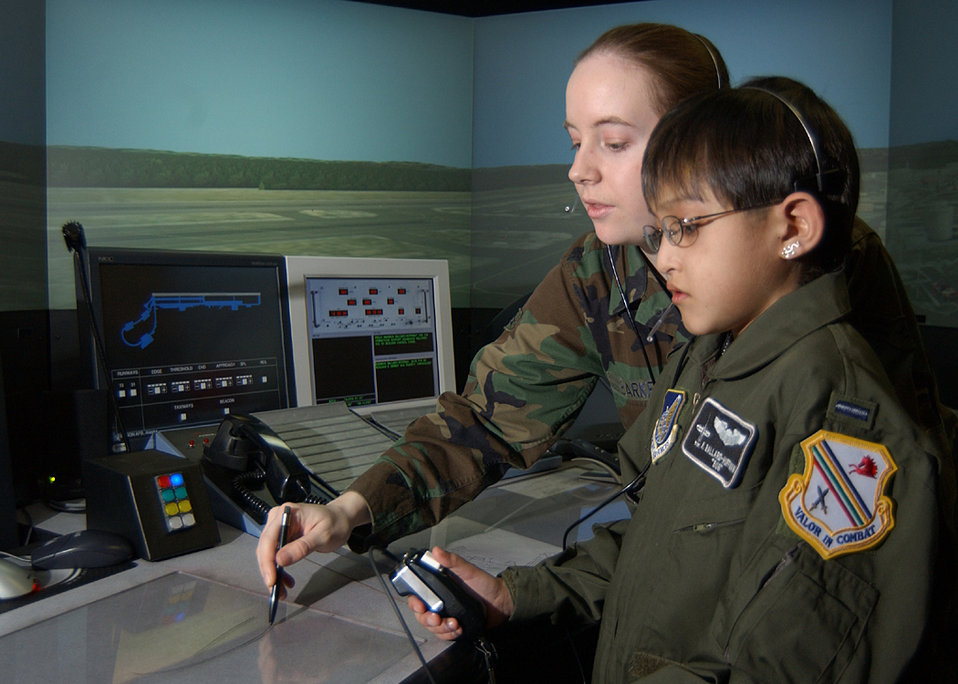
Pilot for a day

EIELSON AIR FORCE BASE, Alaska -- Airman 1st Class Nancy Barker explains the role of air traffic controllers to Kameron Ballard-Huffman at the simulator here. Kameron served as Fighter Pilot for a Day on March 18. The program lets terminally ill children see what it is like to be a fighter pilot. Kameron is in the end stage of a rare liver disease. He is from Husila, Alaska, a town about 250 miles northwest of Fairbanks. Airman Barker is assigned to the 345th Operations Support Squadron.